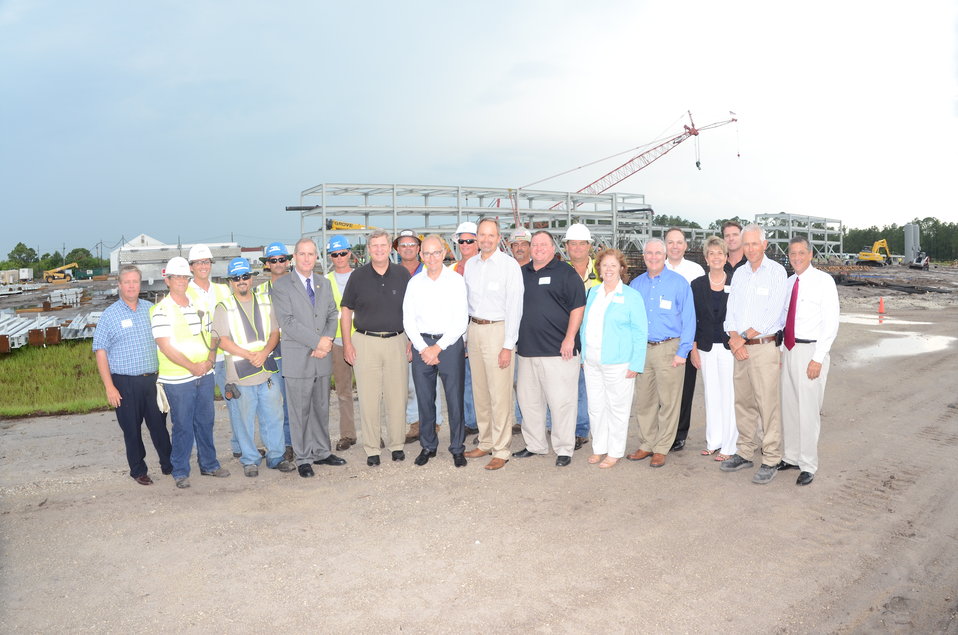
Agriculture Secretary Tom Vilsack visited the waste-to-energy bioprocessing facility under construction in Florida today to announce several small grants to support research into renewable fuels. The INEOS New Planed BioEnergy facility in Vero Beach, Florida, was granted a conditional Agriculture loan guarantee earlier this year to help build and operate a biorefinery capable of producing 8 million gallons per year of cellulosic ethanol and 6 megawatts of electricity. Secretary Vilsack poses with construction workers at the facility.